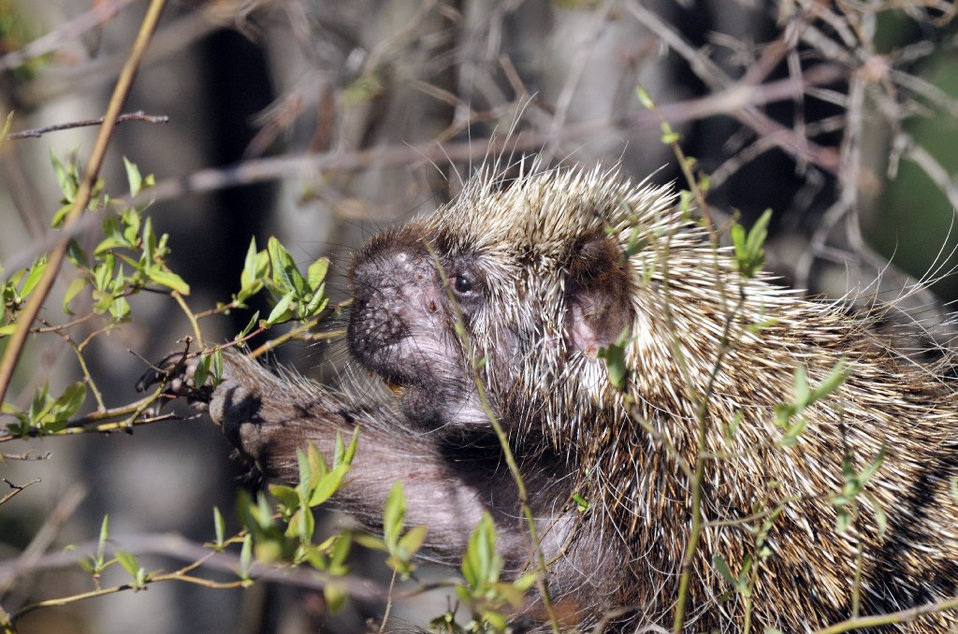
Photo of the Week - North American Porcupine

Photo of the Week - 5/7/12

North American Porcupine photographed at the Quabbin Reservoir near Athol, MA.